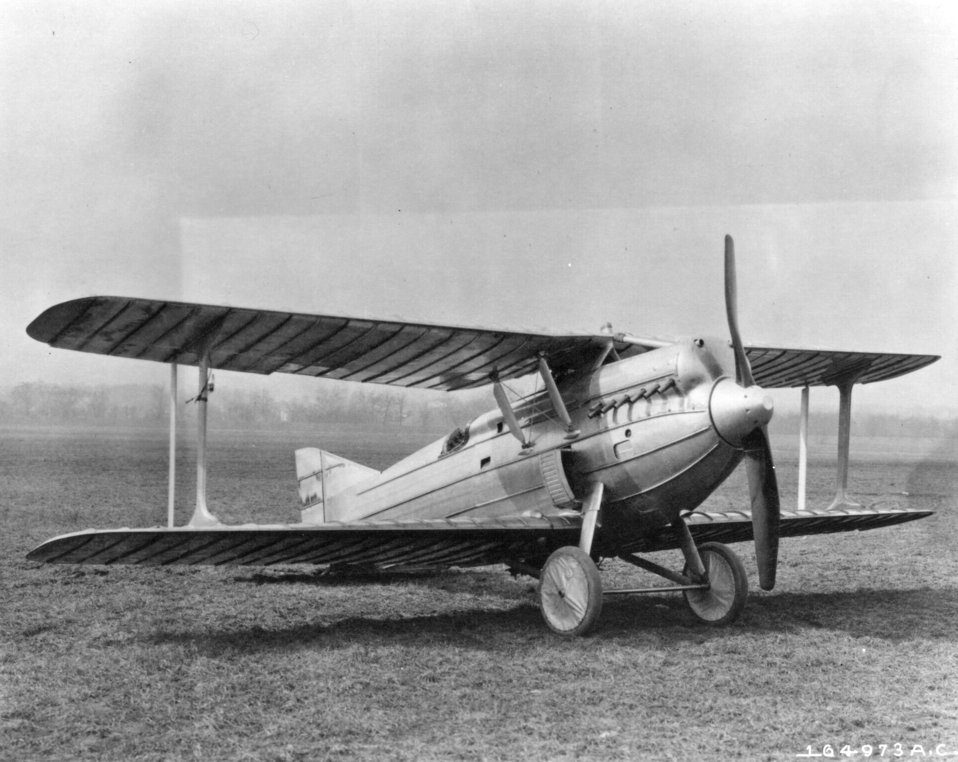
PW-4

EARLY YEARS -- PW-4